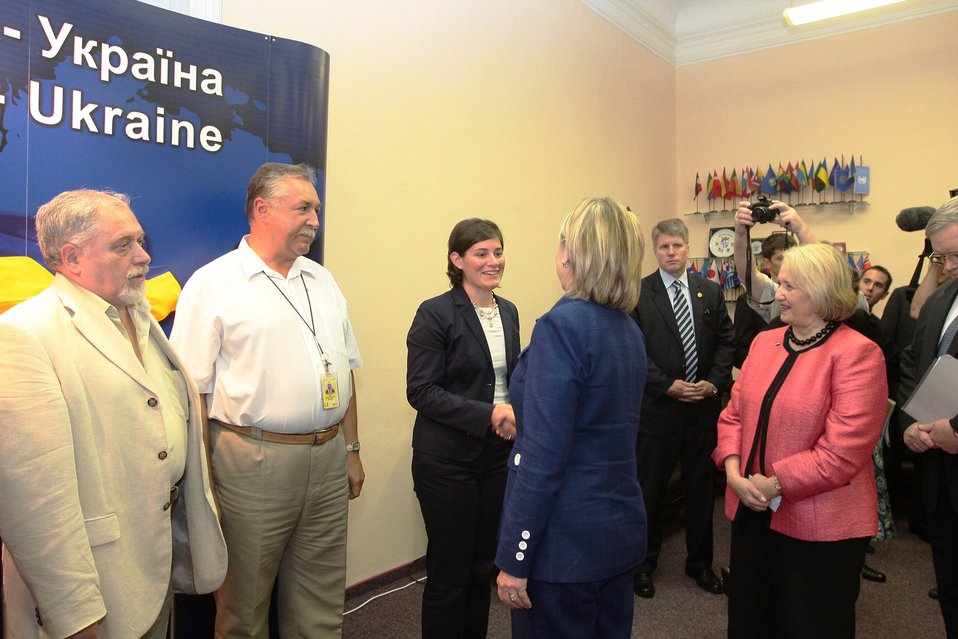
Secretary Clinton Meets With Members of Civil Society and NGO Representatives in Ukraine

U.S. Secretary of State Hillary Rodham Clinton meets with Ukrainian members of civil society and NGO representatives in Kyiv, Ukraine, on July 2, 2010.